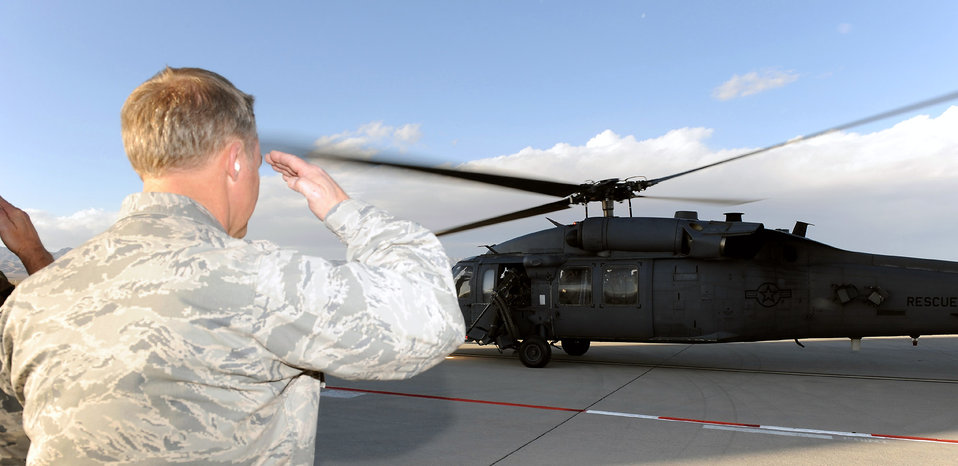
CSAF sees full spectrum of fly, fight, win

Col. Chris Chambliss salutes Gen. Norton Schwartz, Air Force Chief of Staff, as he departs from Creech Air Force Base, Nev., enroute to the U.S. Air Force Weapons School graduation ceremony at Nellis AFB, Nev., Dec. 13. Colonel Chambliss is the 432nd Wing and 432nd Air Expeditionary Wing commander.